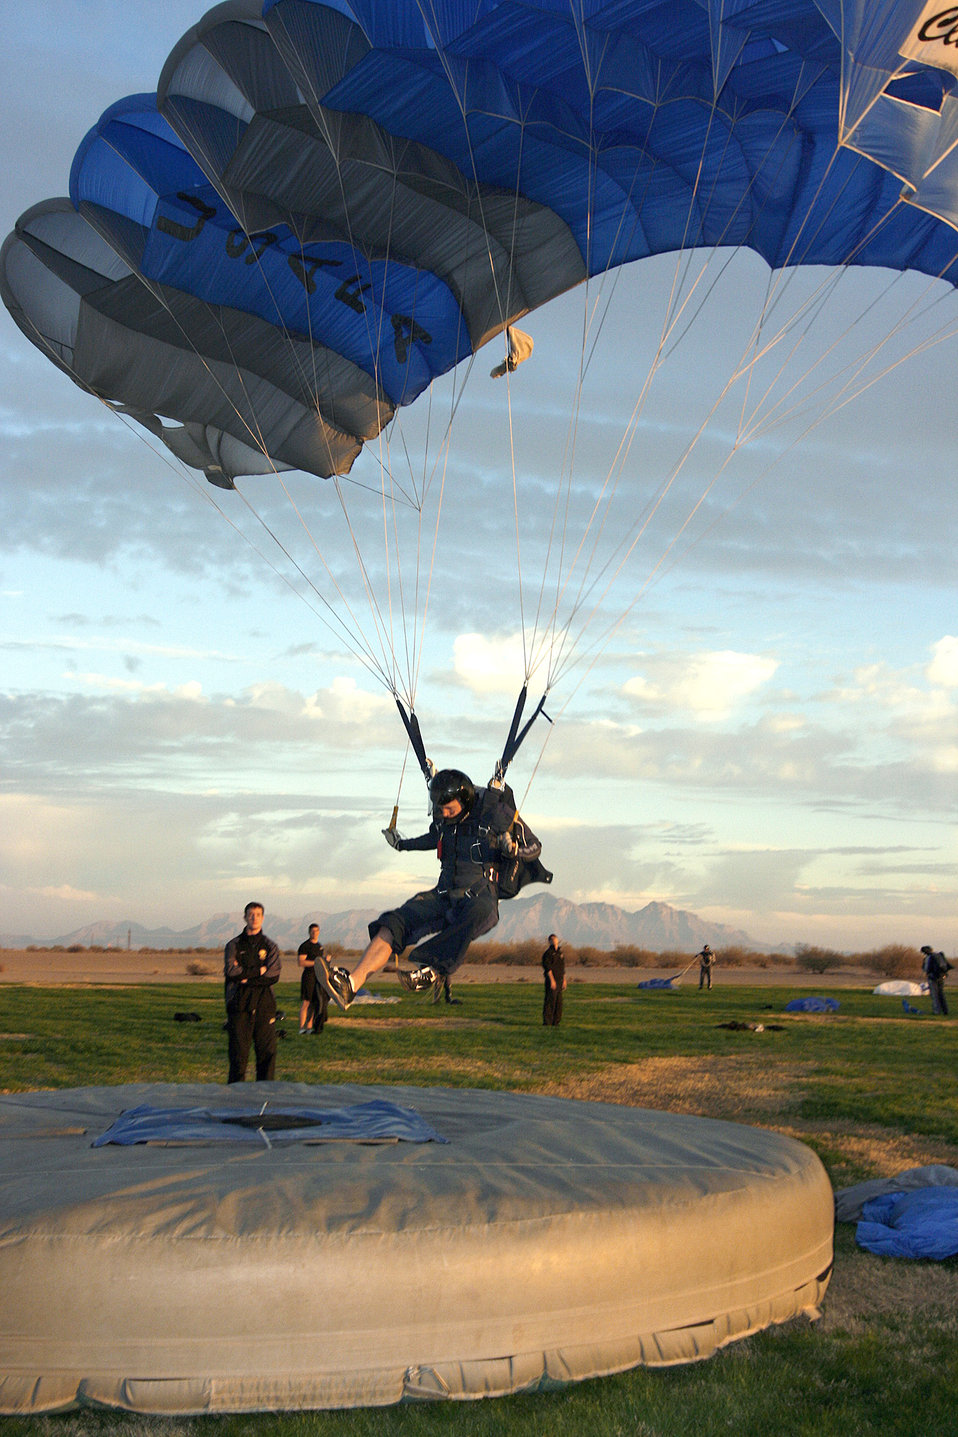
Wings of Blue

Cadet 1st Class Josh LeMair, a member of the Air Force Wings of Blue Parachute Competition Team, nails a classic accuracy jump in the U.S. Parachute Association's National Collegiate Parachuting Championships, held Dec. 30, 2010, to Jan. 1, 2011, in Eloy, Ariz., from. Wings of Blue teams won gold in four-way open formation skydiving, two-way vertical formation skydiving, intermediate and masters sport accuracy, intermediate and masters classic accuracy and team classic accuracy.